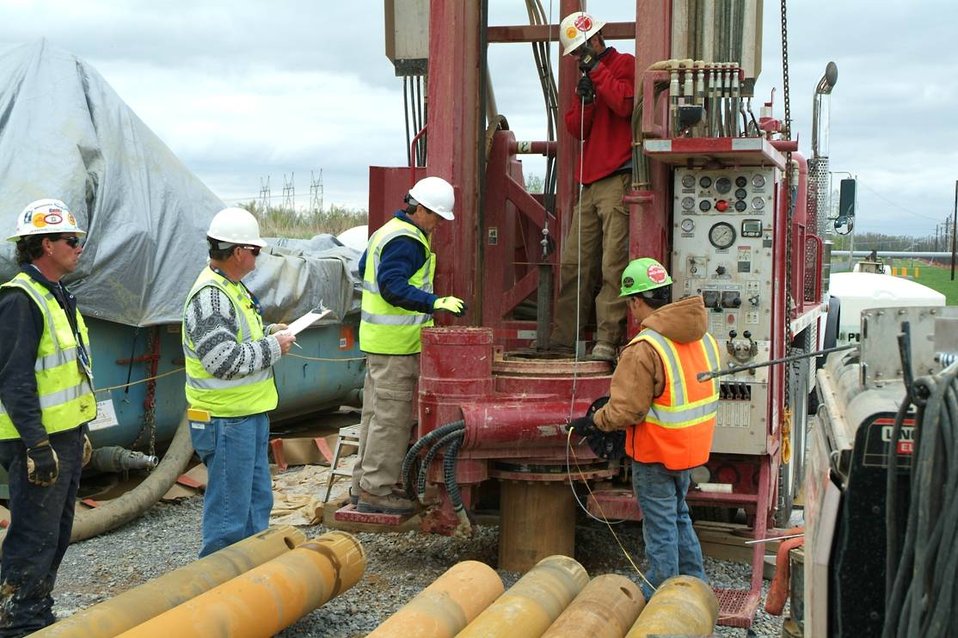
Paducah Site Focuses on Groundwater Cleanup, Waste Disposition in Fiscal Year 2011

Workers drill one of two new extraction wells that in 2010 increased the pump-and-treat mass capture rate of TCE to nearly 100 percent in one large plume of contaminated groundwater that extends northwesterly from the Paducah Site. A similar approach is anticipated for a second large plume that extends northeasterly, with well construction starting in 2013.